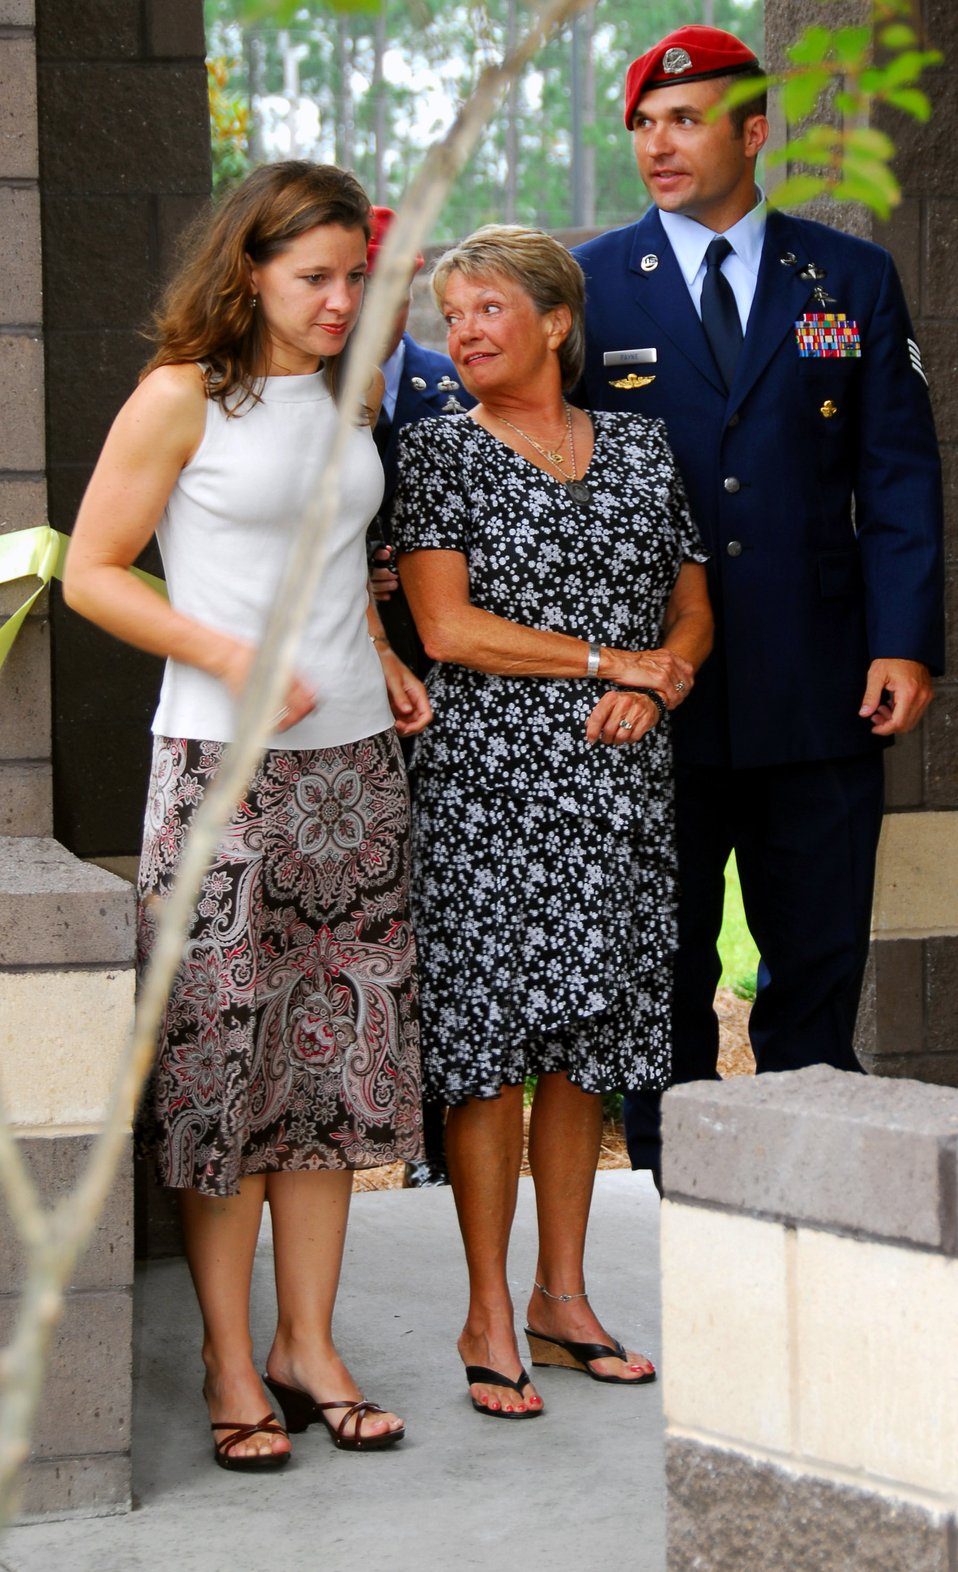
Fallen Airmen memorialized at Hurlburt

Lindsey Fresques (left) and Linda Crate reflect after cutting the ribbon dedicating the Crate Special Tactics Advanced Skills Training Center May 30 at Hurlburt Field, Fla. Ms. Crate's son, Staff Sgt. Casey Crate, and Ms. Fresques' husband, Capt. Jeremy Fresques, were special tactics Airmen who died in Iraq on Memorial Day 2005. They are escorted by Staff Sgt. Jason Payne, a special tactics advanced skills instructor. The center will provide advanced operational training to new special tactics Airmen.